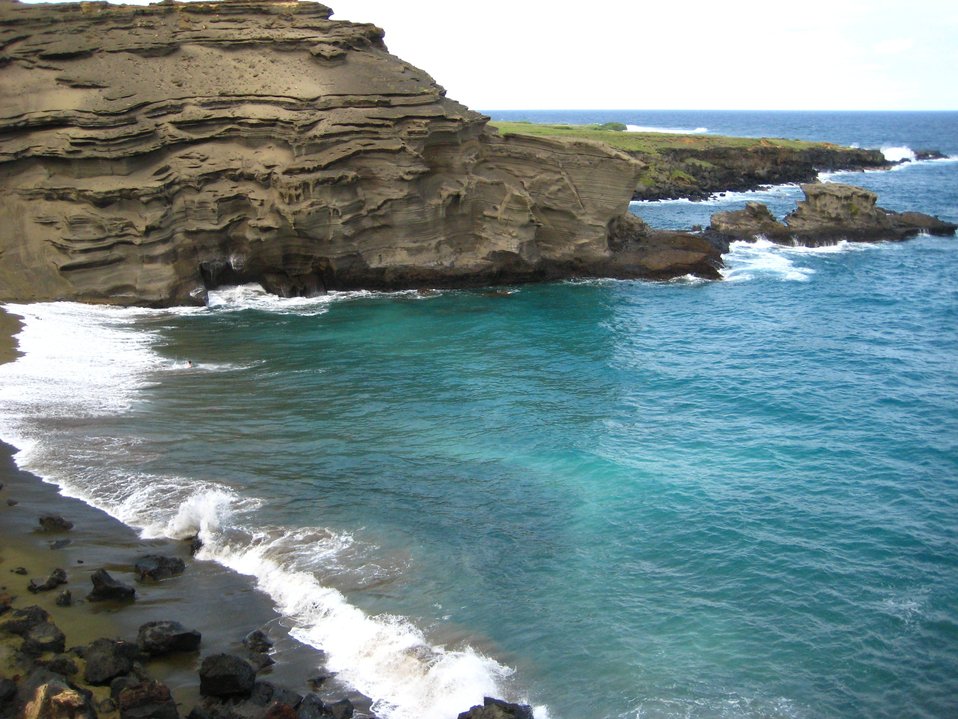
Eroding volcanic ash flows